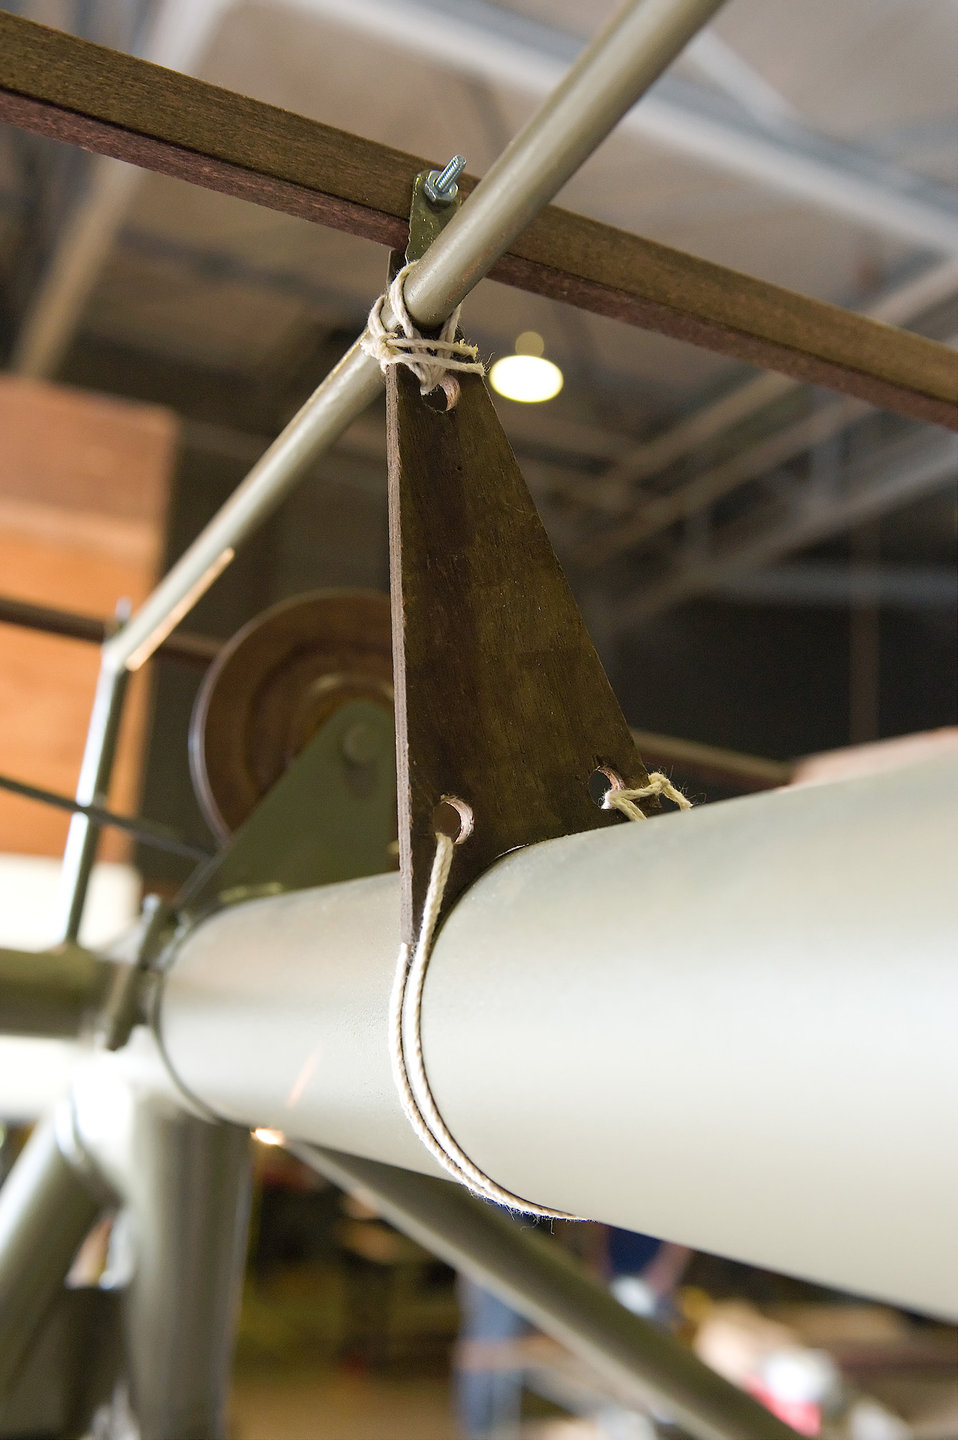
Restoring memories

Strings hold the frame of a Waco CG-4A Combat Glider together June 23, 2011, at the Air Mobility Command Museum at Dover Air Force Base, Del. The restorers pay special attention to design details to recreate a historically accurate aircraft.